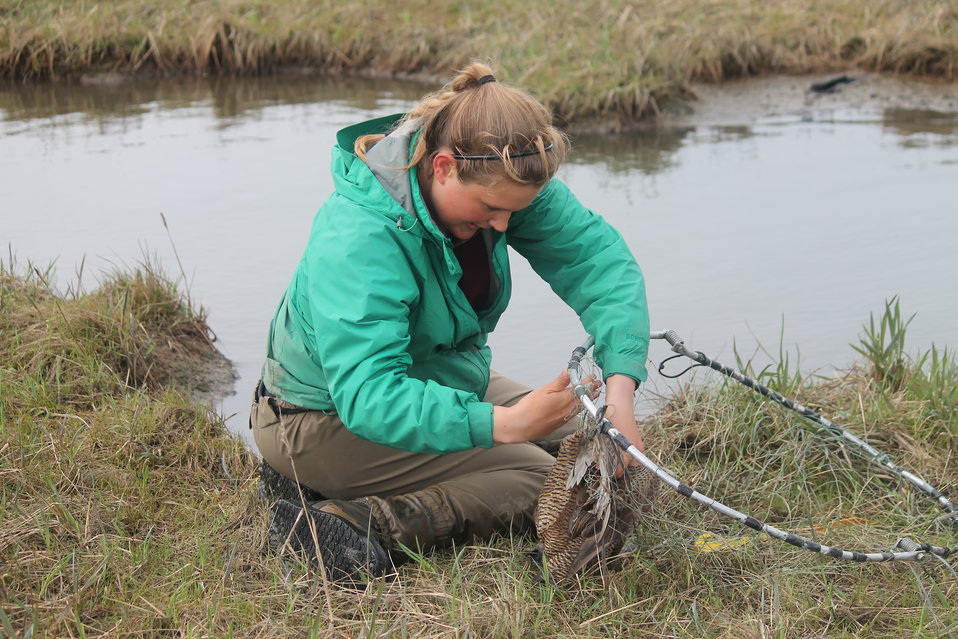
Bow-trapped Spectacled Eider

Once the female has made her way back to the nest and is resting comfortably on it, the line is pulled. This releases the trigger and snaps the bowtrap over the female. Here a spectacled eider female has been bow-trapped.

USFWS Yukon Delta NWR